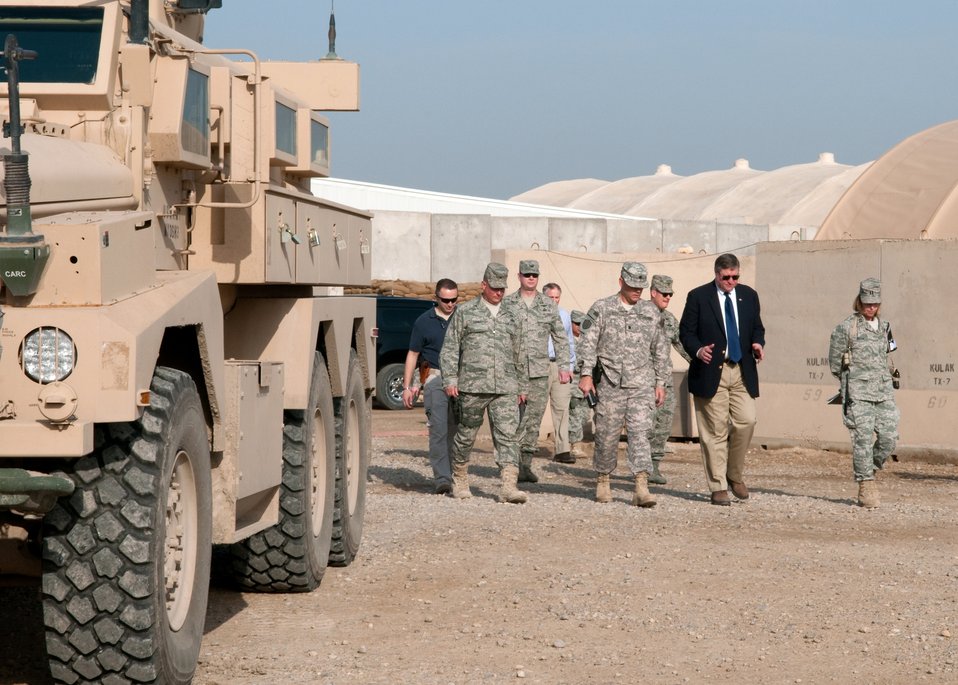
Secretary of the Air Force visits Ali Airmen

Lt. Col. Steven Ramsay, senior adviser for the Logistics Military Advisory Team, explains his team's mission to Secretary of the Air Force Michael Donley as they walk by a mine resistant ambush protected vehicle Jan. 31, 2010, at Ali Base, Iraq.